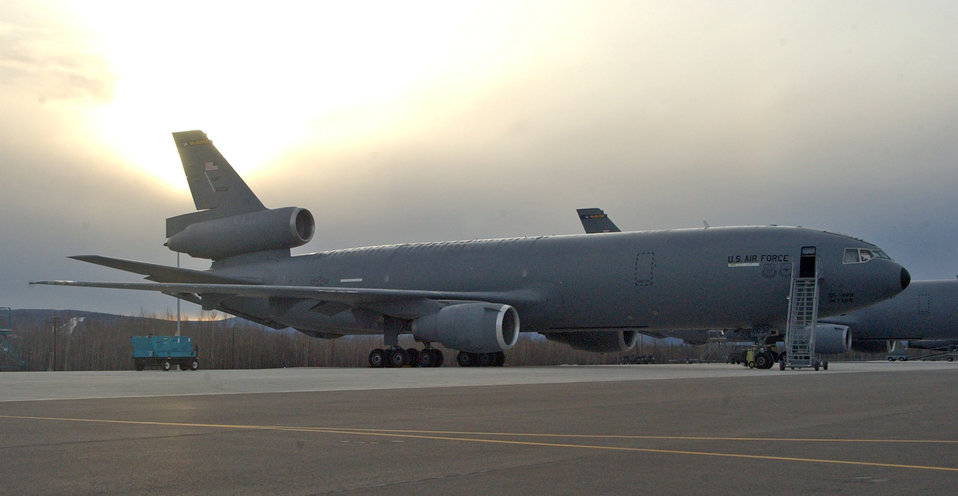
KC-10 Extenders keep jets on target

A McGuire Air Force Base KC-10 Extender and its crew prepare for a morning flight during Red Flag-Alaska 07-1 April 11. Red Flag-Alaska is a Pacific Air Forces-directed field training exercise for U.S. forces flown under simulated air combat conditions. It is conducted on the Pacific Alaskan Range Complex with air operations flown out of Eielson and Elmendorf Air Force Bases. .